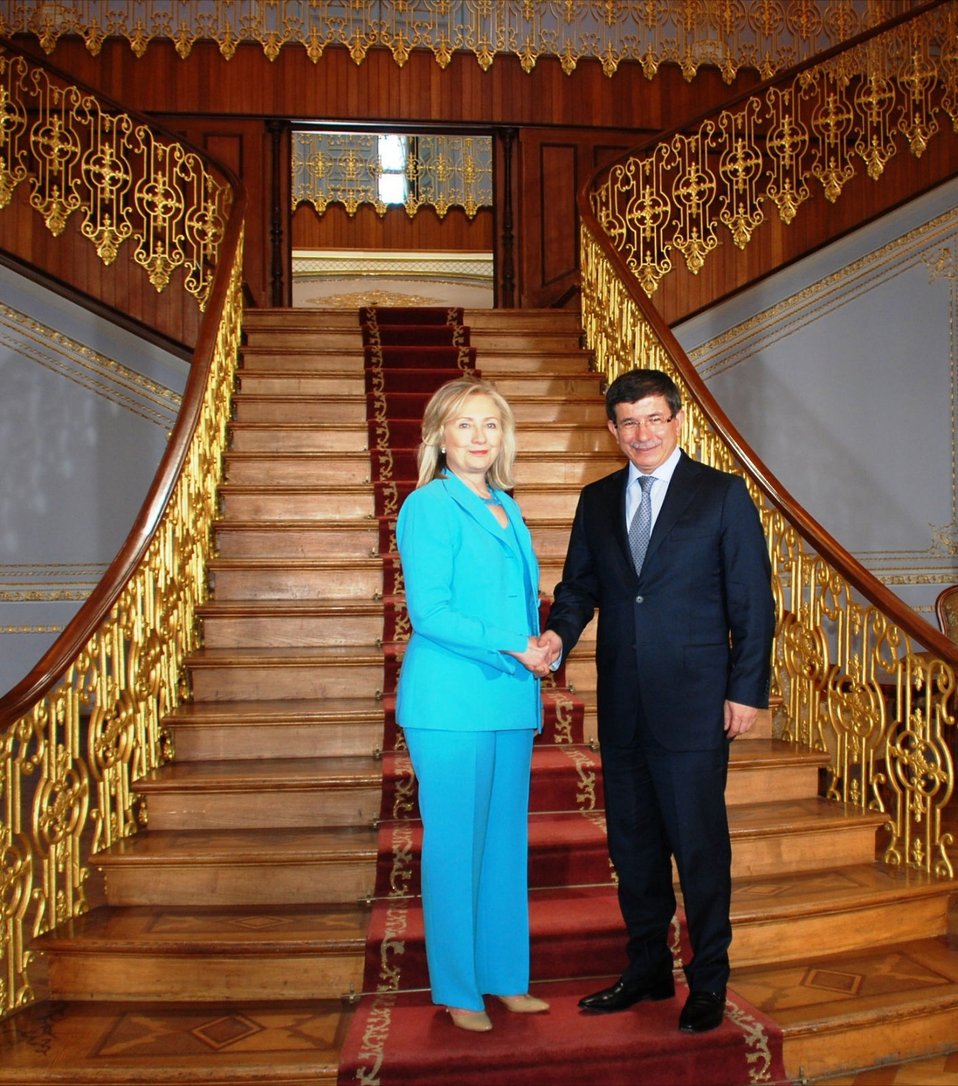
Secretary Clinton and Turkish Foreign Minister Davutoglu Pose for a Photo

U.S. Secretary of State Hillary Rodham Clinton and Turkish Foreign MInister Ahmet Davutoğlu pose for a photo after their bilateral meeting in Istanbul, Turkey, on July 16, 2011.